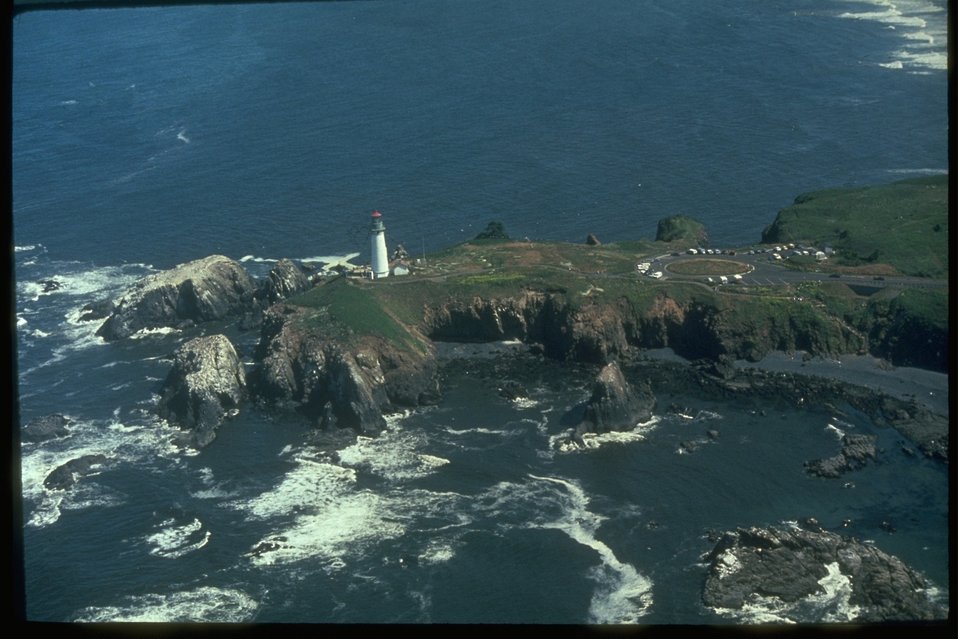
Aerial shot of the Yaquina Head Outstanding Natural Area.